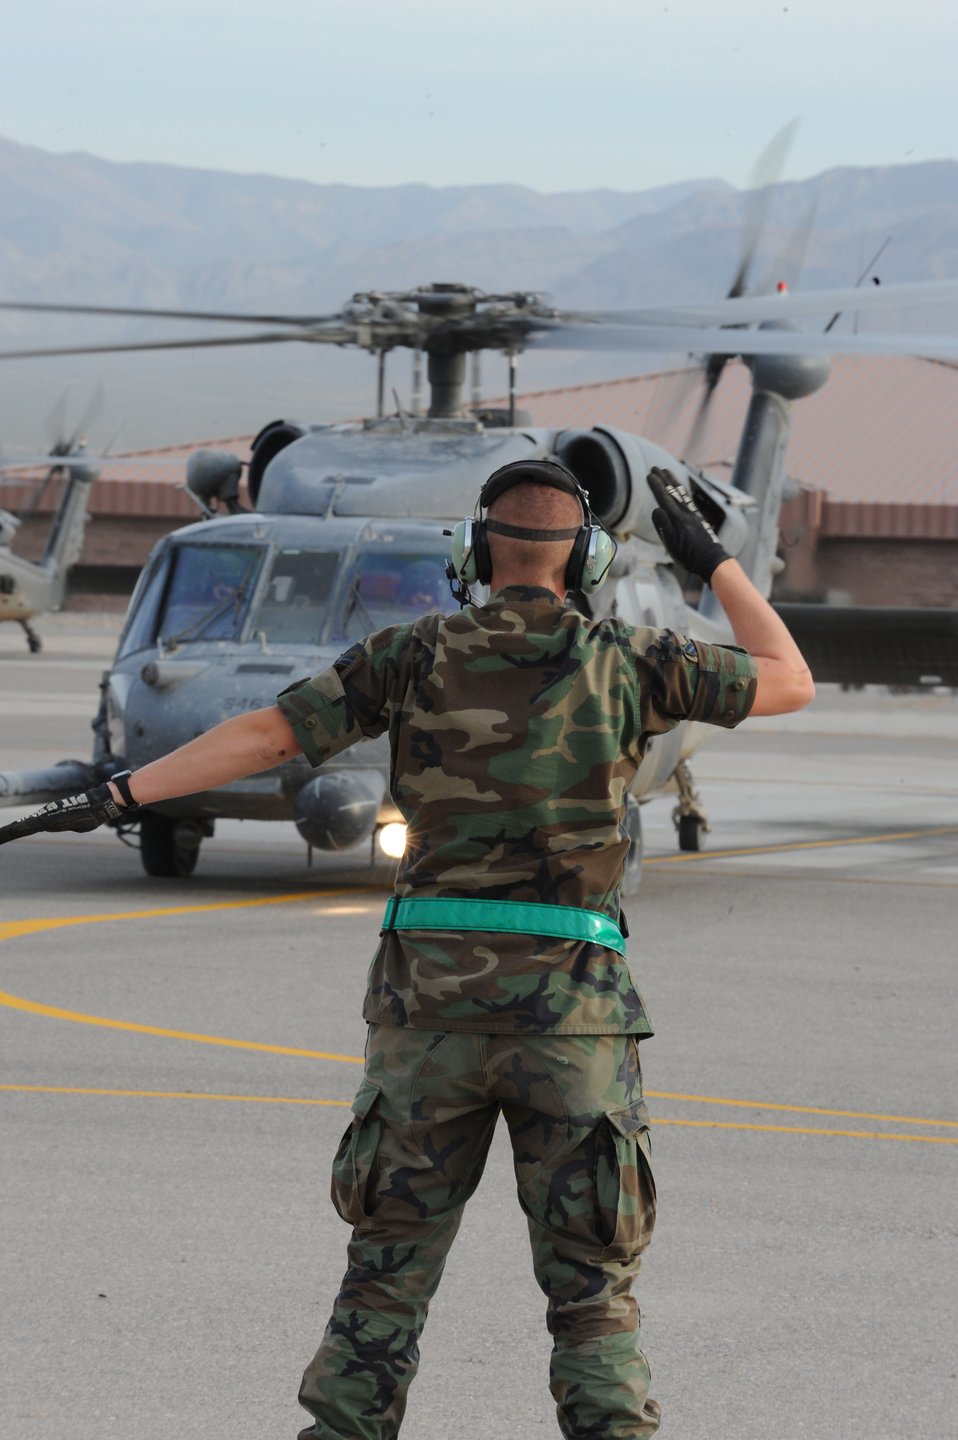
Nellis Airmen locate missing aircraft

Airman 1st Class Christopher Mallaire prepares to marshall out an HH-60G Pave Hawk departing for a rescue mission May 1 at Nellis Air Force Base, Nev. Four helicopters and 24 Airmen from the 58th and 66th Rescue Squadrons deployed to assist in the search for a pilot and passenger who were aboard a motorized sailplane that disappeared from radar April 24 in the Sierra Nevada Mountain Range near Mammoth Lakes, Calif. Airman Mallaire is a crew chief with the 763rd Aircraft Maintenance Squadron.